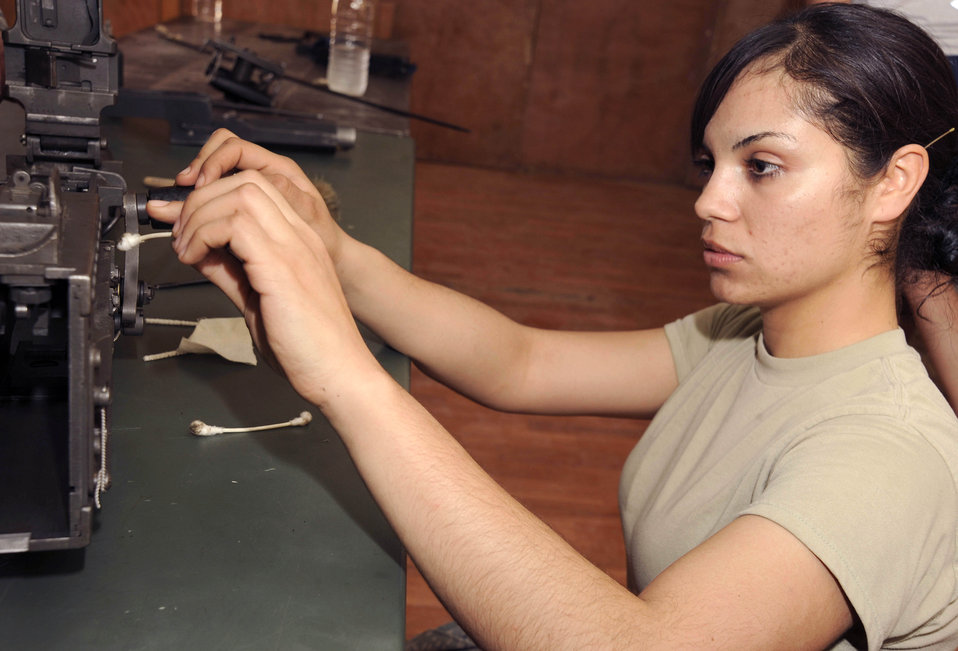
Operation Iraqi Freedom

Senior Airman Elizabeth Gonzalez cleans a .50 caliber machine gun at the armory at Sather Air Base, Iraq, March 12. Airman Gonzalez is one of a few security forces members qualified on the .50 cal here. Airman Gonzales is a 447th Expeditionary Security Forces Squadron heavy weapons operator.